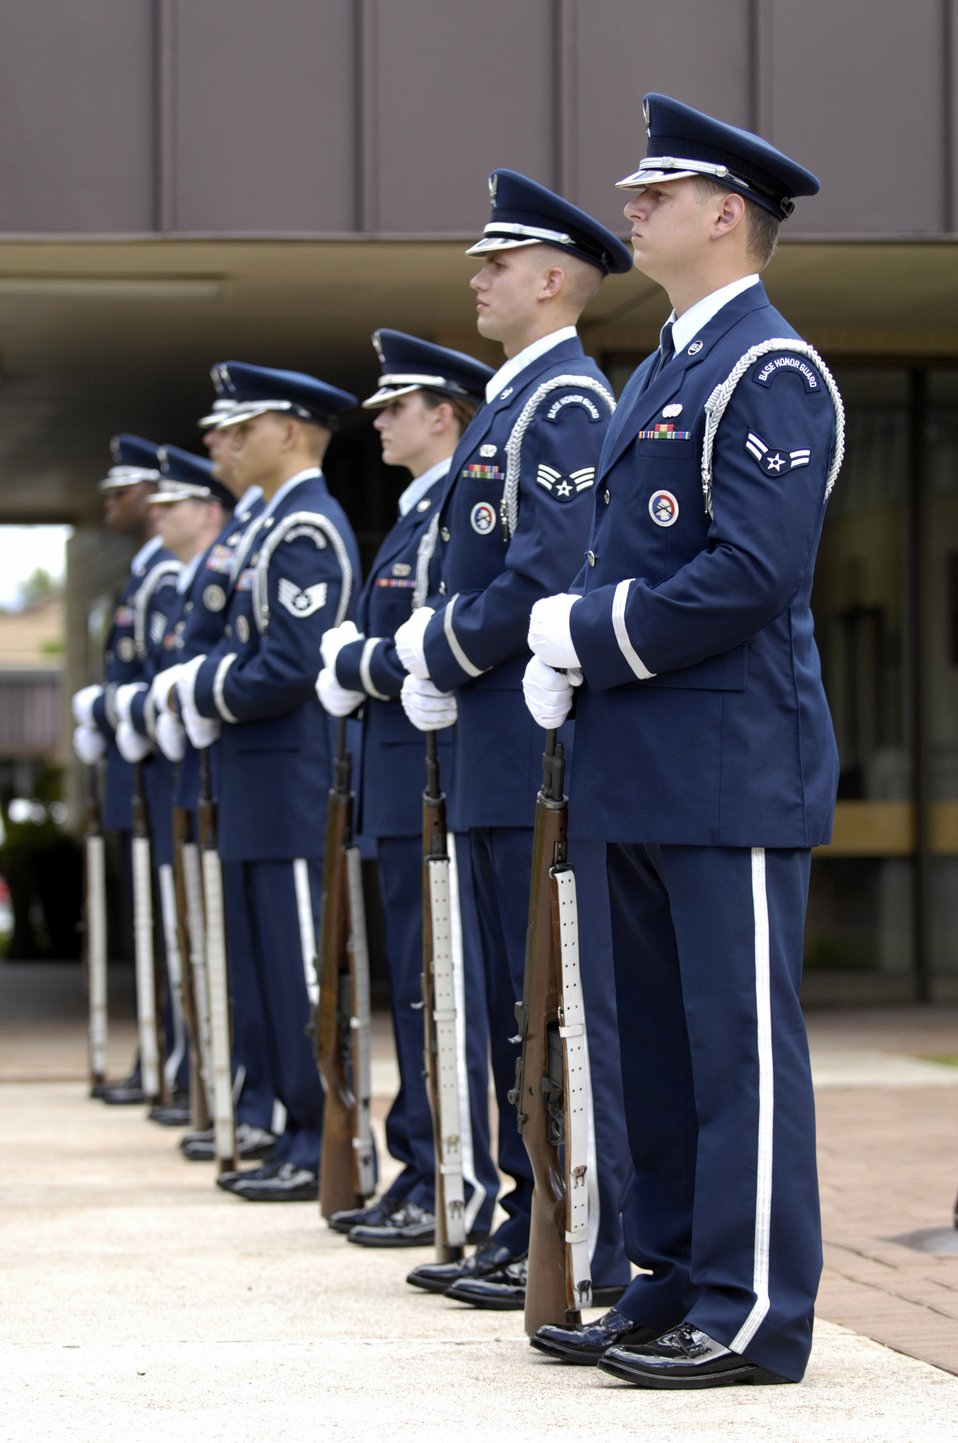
Solemn service

Members of the Honor Guard wait to fire a 21-gun salute during a memorial service honoring Senior Airman William Newman at the base chapel June 13 at Hickam Air Force Base, Hawaii. Airman Newman, an explosive ordnance disposal technician assigned to the 15th Civil Engineer Squadron, was killed June 7 by an improvised explosive device, which detonated while he was supporting Army and Iraqi security forces near Mishna, Iraq.